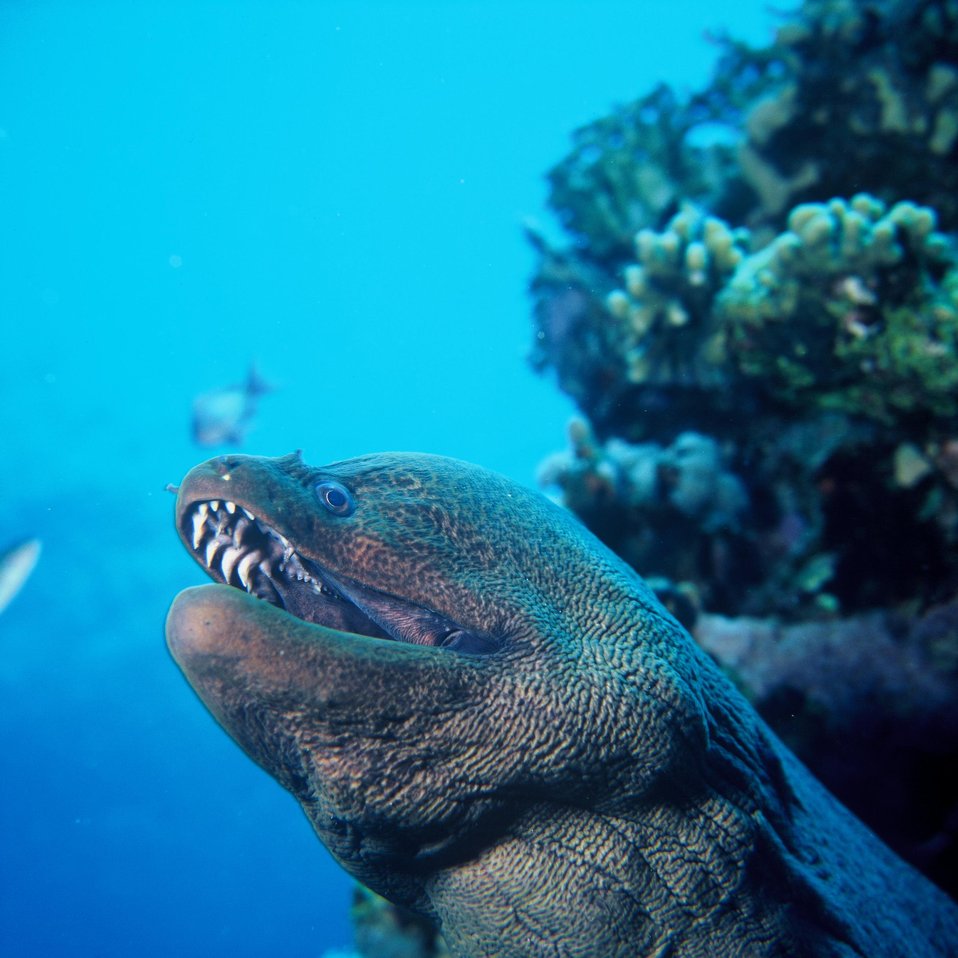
Gymnothorax Javanicus